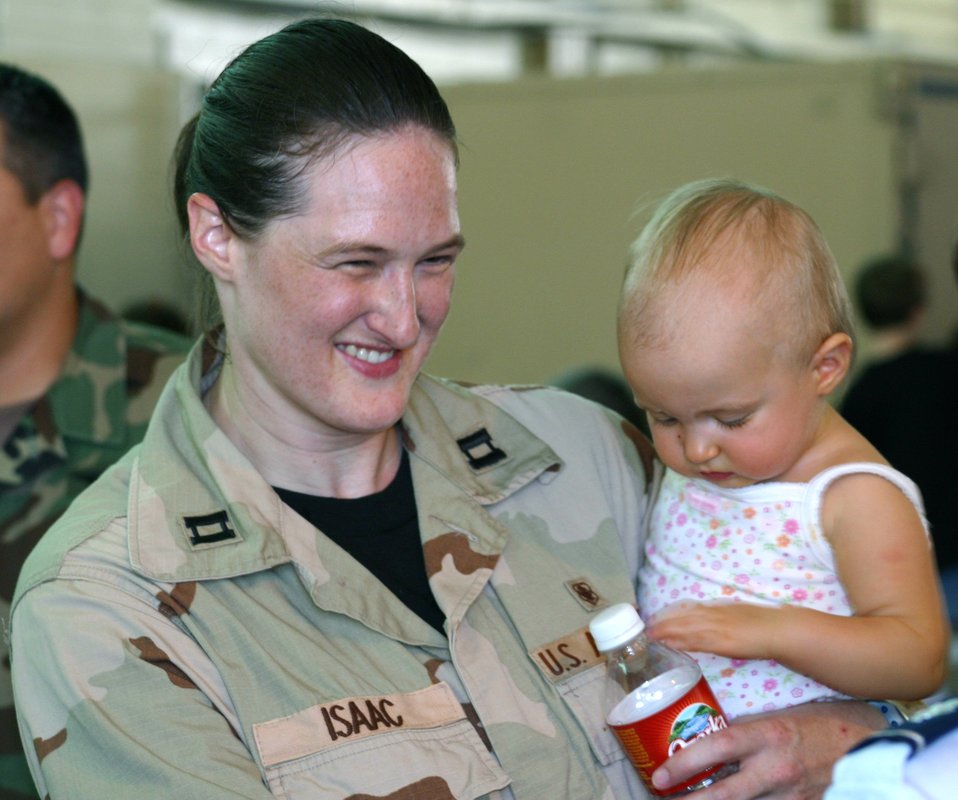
Medical warriors deploy to Iraq

LACKLAND AIR FORCE BASE, Texas -- Capt. Kimberly Isaac holds her daughter one last time before deploying to Iraq on Aug. 30. About 160 Airmen from the 59th Medical Wing at Wilford Hall Medical Center here left to staff a field hospital in Iraq.